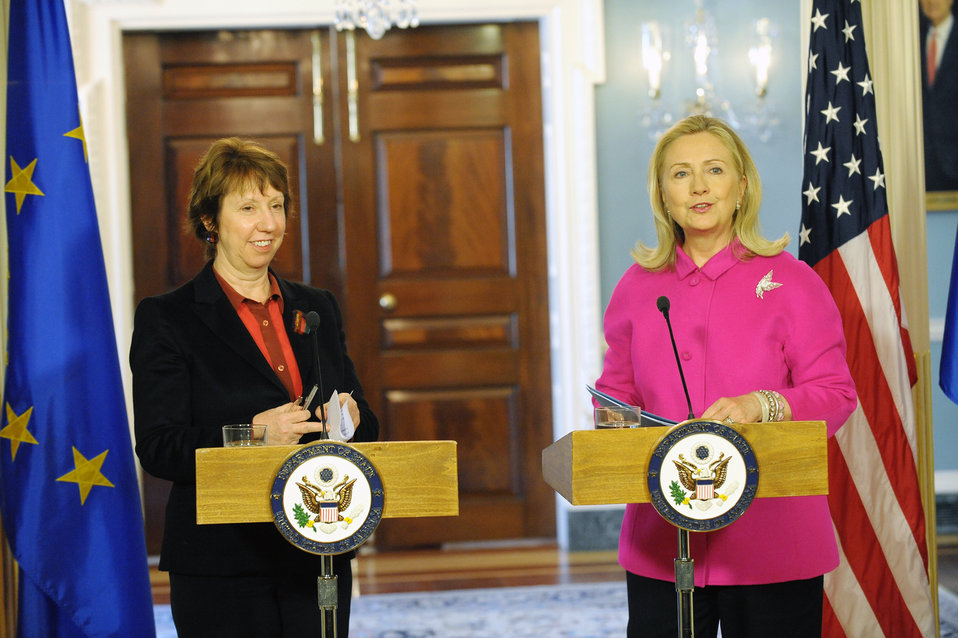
Secretary Clinton and EU High Representative Ashton Hold a Joint Press Conference

U.S. Secretary of State Hillary Rodham Clinton and European Union High Representative Catherine Ashton hold a joint press conference after their bilateral meeting at the U.S. Department of State in Washington, D.C., on February 17, 2012.